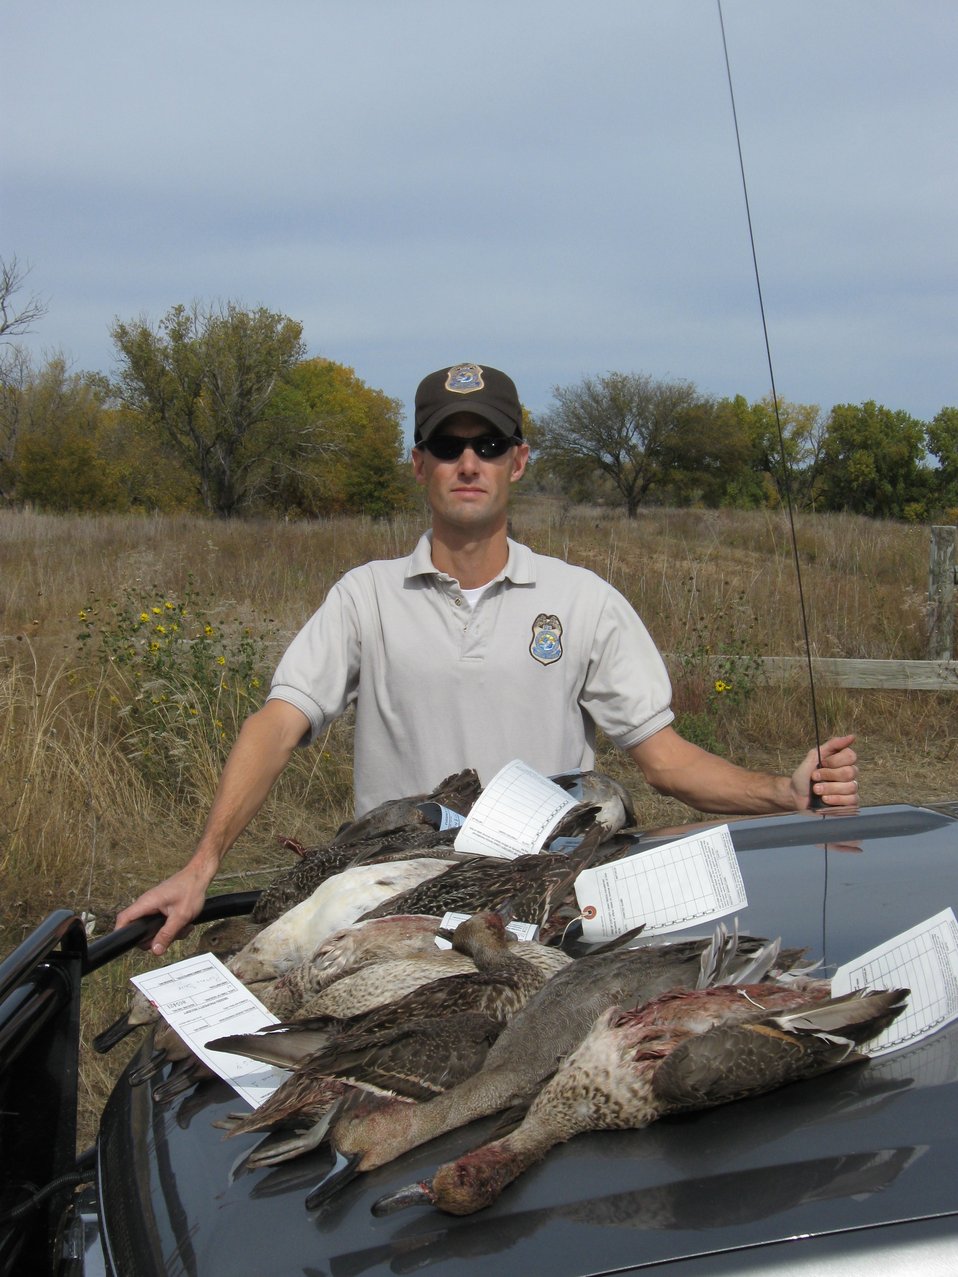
Shelby Finney and pintails

National Wildlife Refuge System Law Enforcement Officer Shelby Finney collects evidence for a pintail overlimit case at Salt Plains National Wildlife Refuge in Oklahoma. Finney was named 2011 Officer of the Year for the U.S. Fish and Wildlife Service’s Southwest Region. (USFWS)